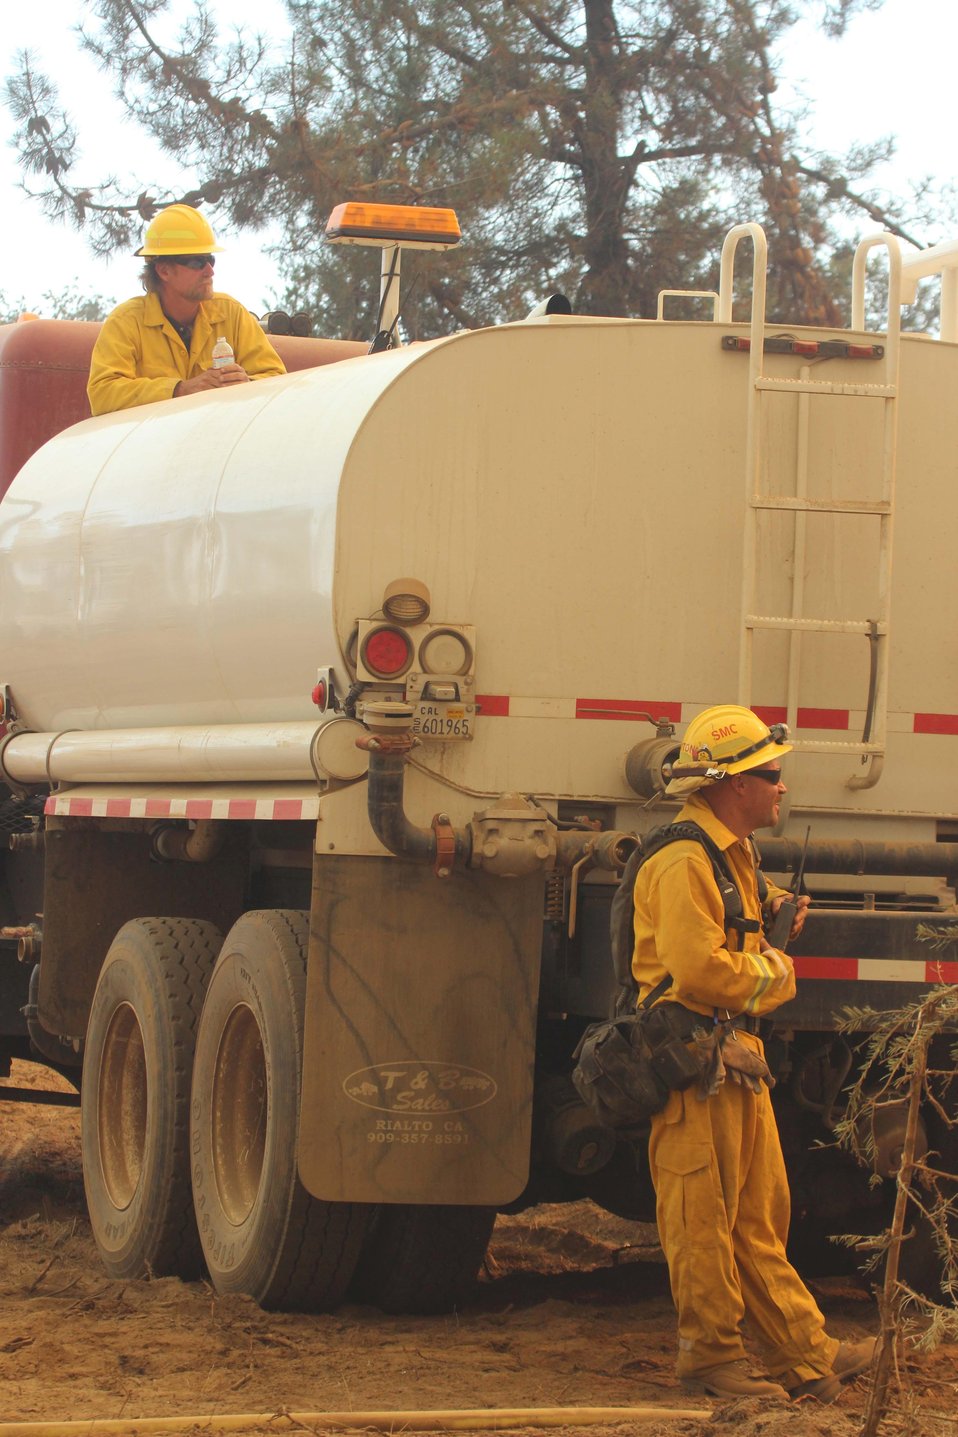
Fire crewman stand ready with water tanker at the Rim Fire. The Rim Fire in the Stanislaus National Forest near in California began on Aug. 17, 2013 and is under investigation. The fire has consumed approximately 253,332 acres and is 80% contained.